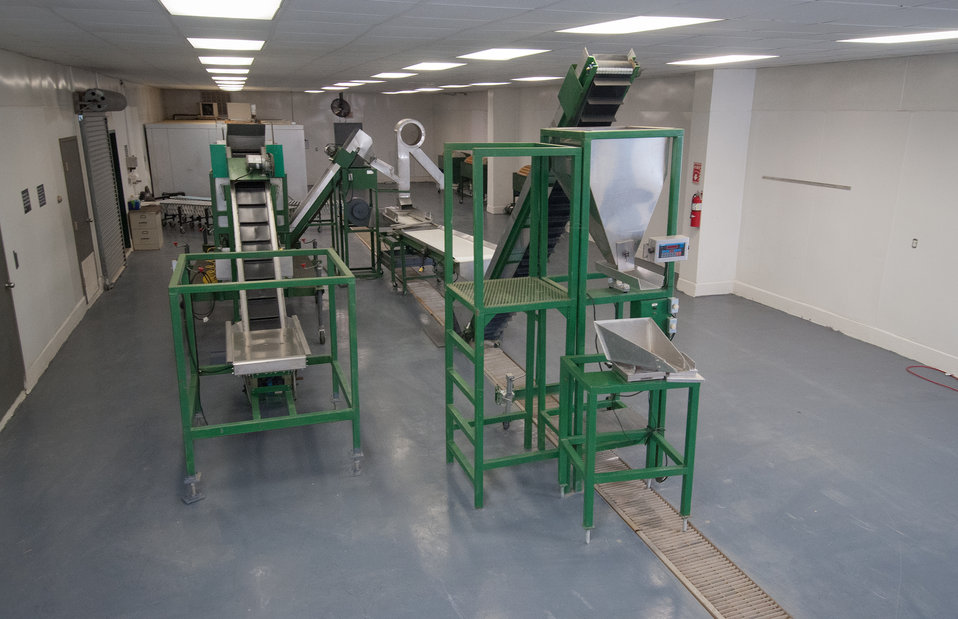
The University of Arkansas Pine Bluff, Agriculture Demonstration Outreach Center in Marianna, AR was able to purchase this purple hull pea processing equipment with a U.S. Department of Agriculture (USDA) Rural Development (RD) Rural Business Enterprise Grant (RBEG) on Mar. 5, 2013. USDA in partnership Heifer International (an International organization whose mission is to work with communities to end hunger and poverty and care for the Earth) and various for-profit and non-profit organizations have put in motion the “Seeds of Change Implementation Plan” to use sustainable agriculture to build food systems in the Arkansas Delta. The program has evolved into the Arkansas Delta Seeds of Change (ADSOC) Initiative. The ADSOC Initiative assists producers with technical assistance for crop production, management, harvesting, food security, value added products and marketing options and provides access to specialized production and marketing equipment.